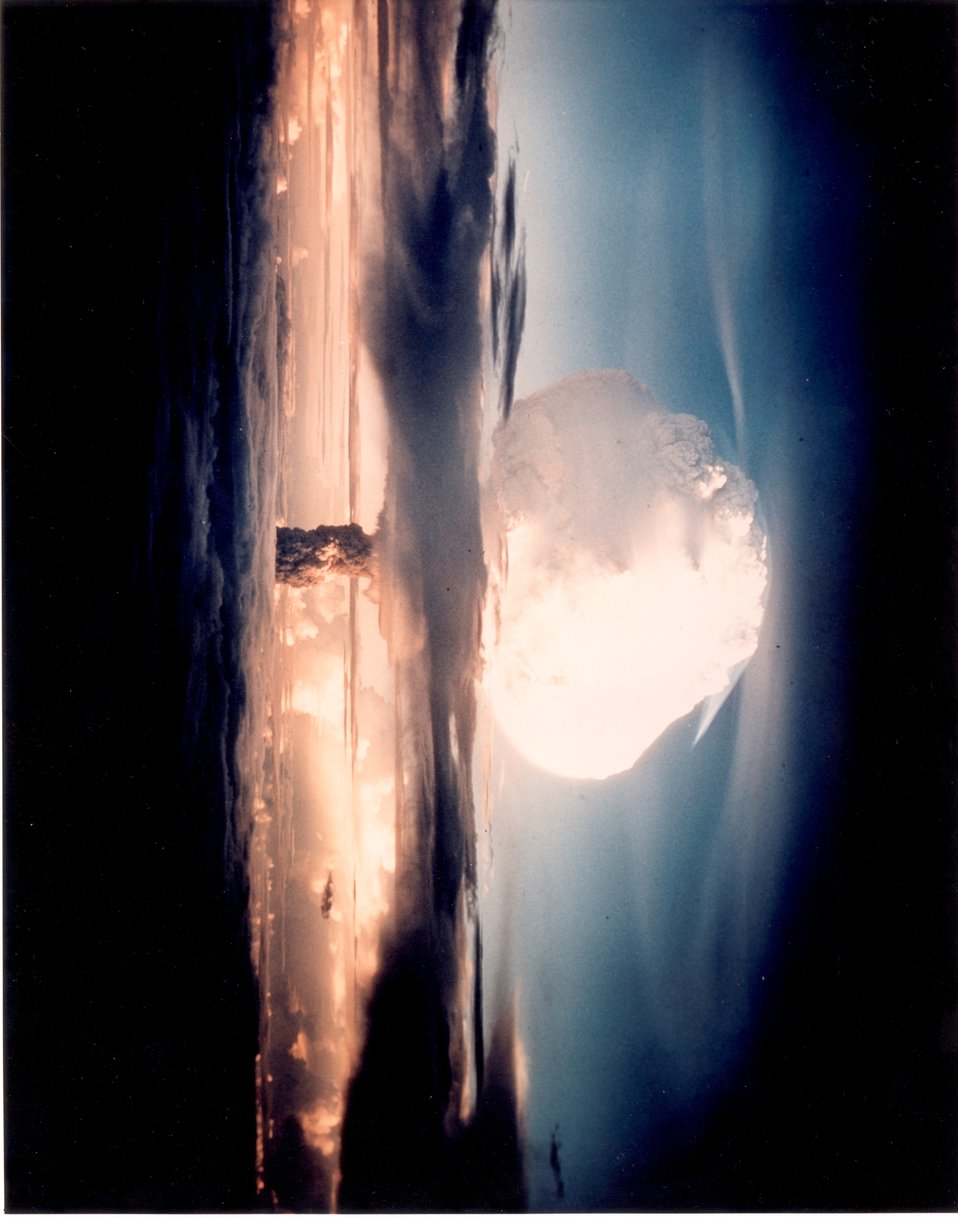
Ivy mike- experimental theronuclear device. (October 31,1952)